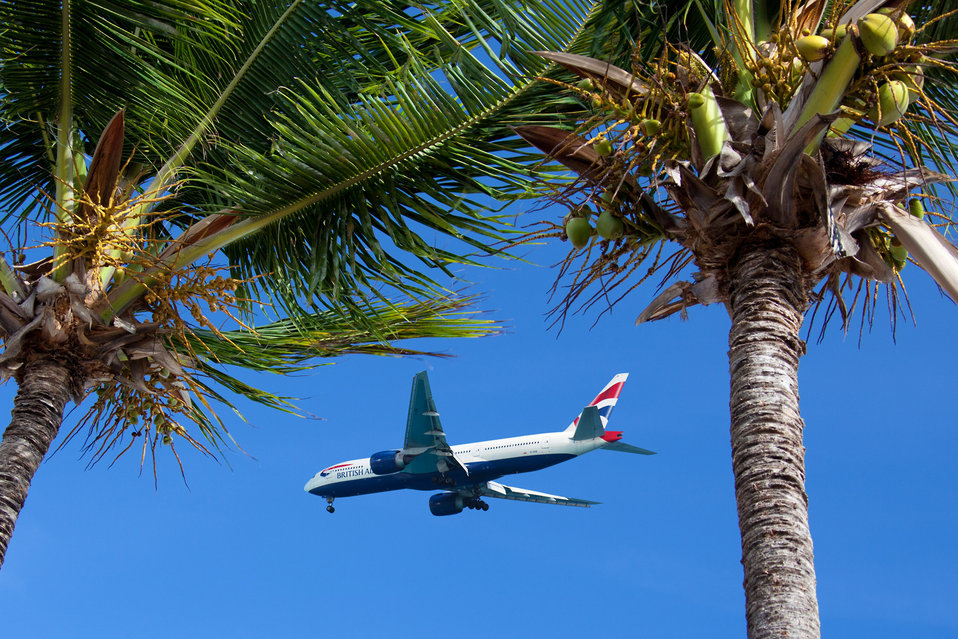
Holiday travel

Airplane between two palm trees on blue sky.